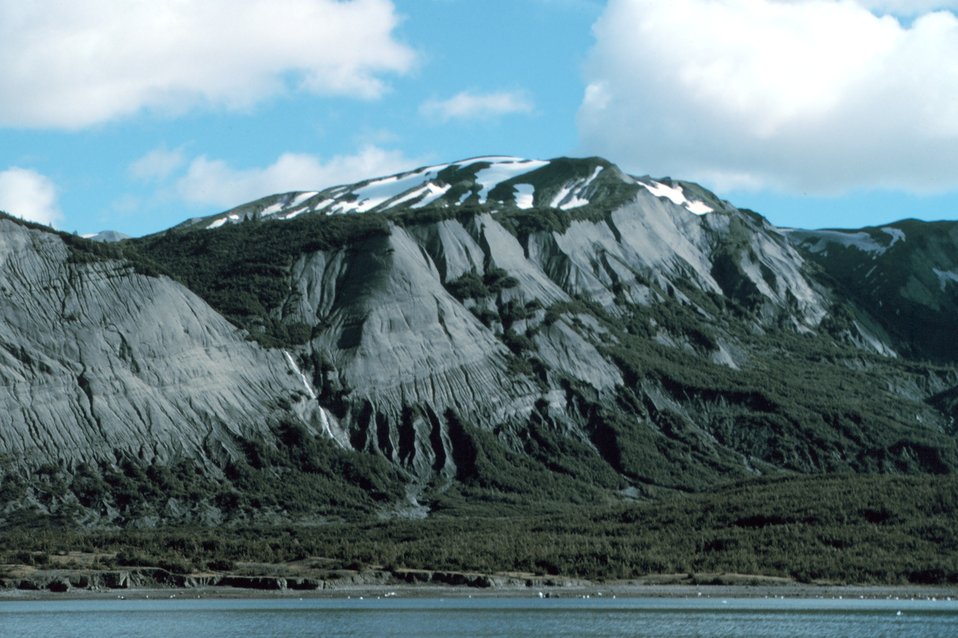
Tilted strata in Tann Fjord.